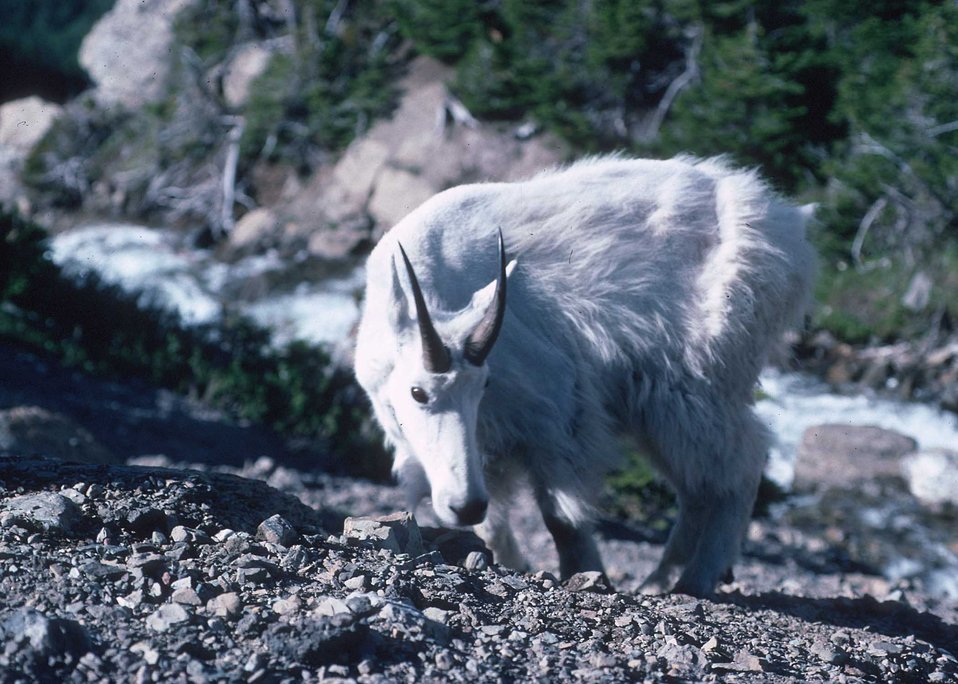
A mountain goat.